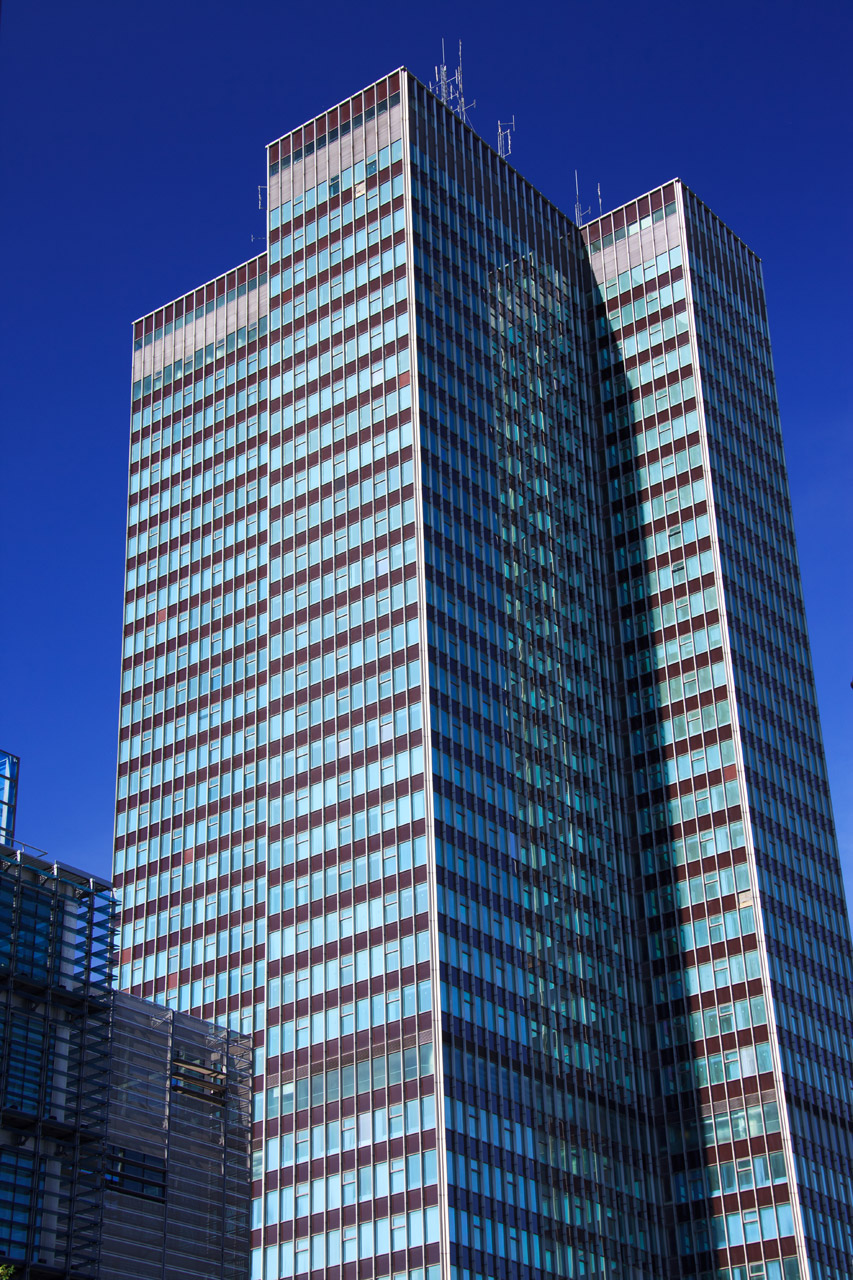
Tall office building with blue sky background in london.